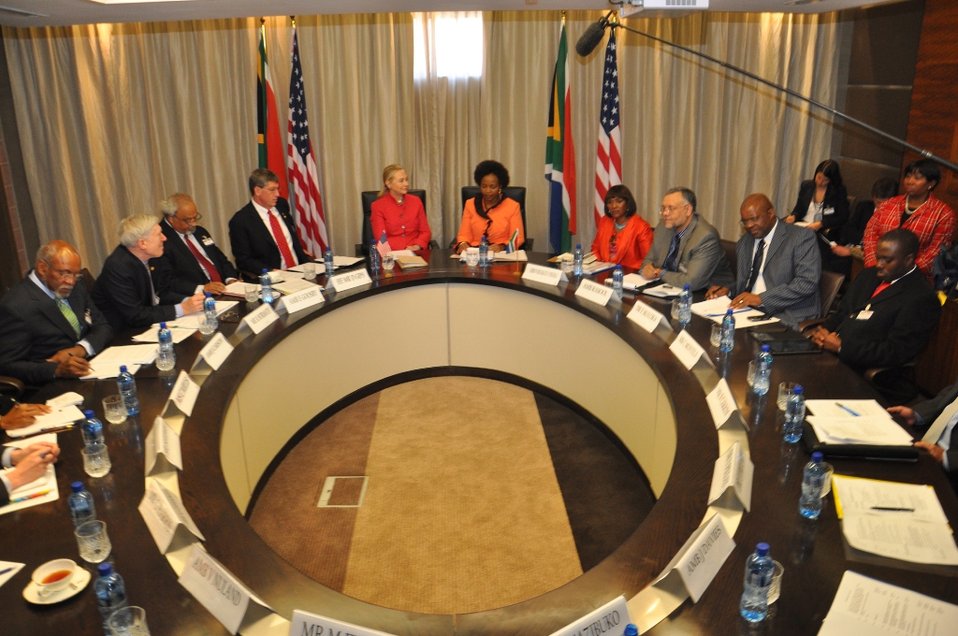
Secretary Clinton Meets With South African International Relations and Cooperation Minister Nkoana-Mashabane

U.S. Secretary of State Hillary Clinton meets with South African International Relations and Cooperation Minister Maite Nkoana-Mashabane for the second meeting of the South Africa-United States of America Strategic Dialogue in Johannesburg, South Africa, on August 7, 2012.